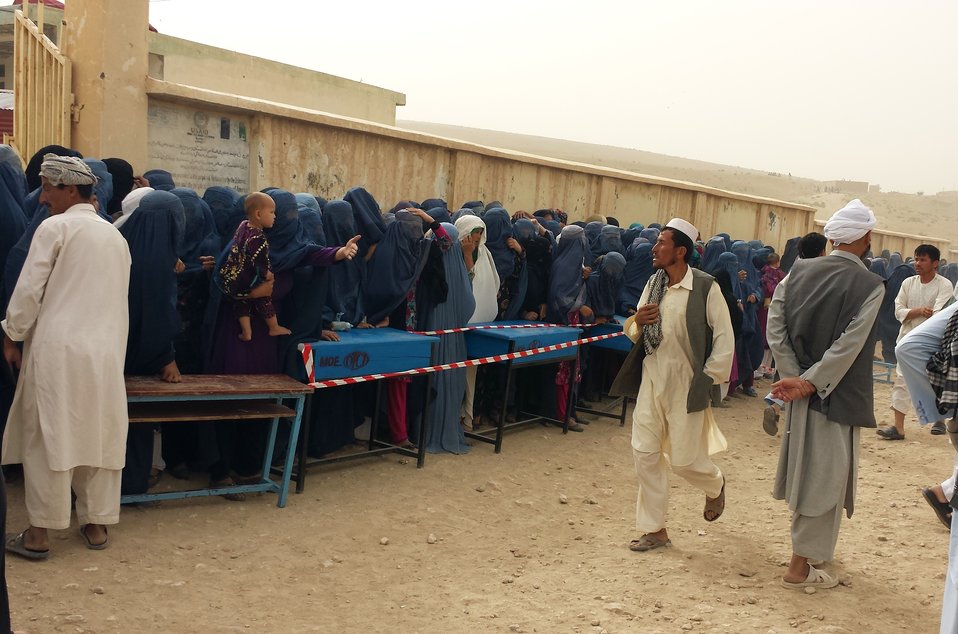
Women wait to vote near a polling center in northern Samangan province.